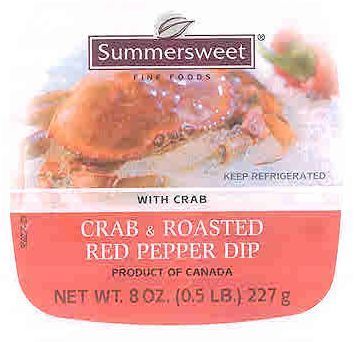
RECALLED - Dip and Mousse

April 15, 2011 - Product Recall - Charcuterie La Tour Eiffel Recalls Mousses and Dips.